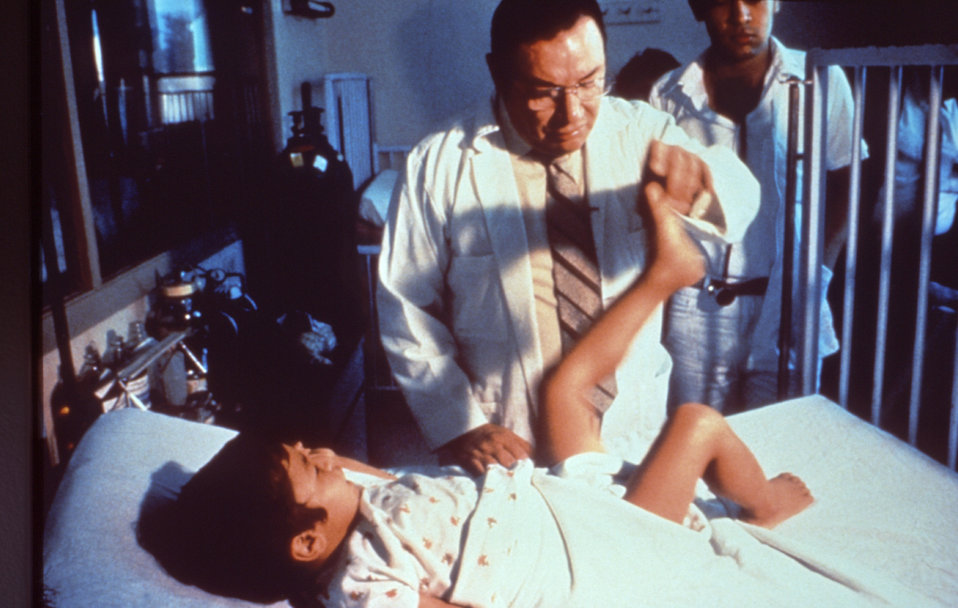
This is a photograph of a physician examining a child afflicted with polio.